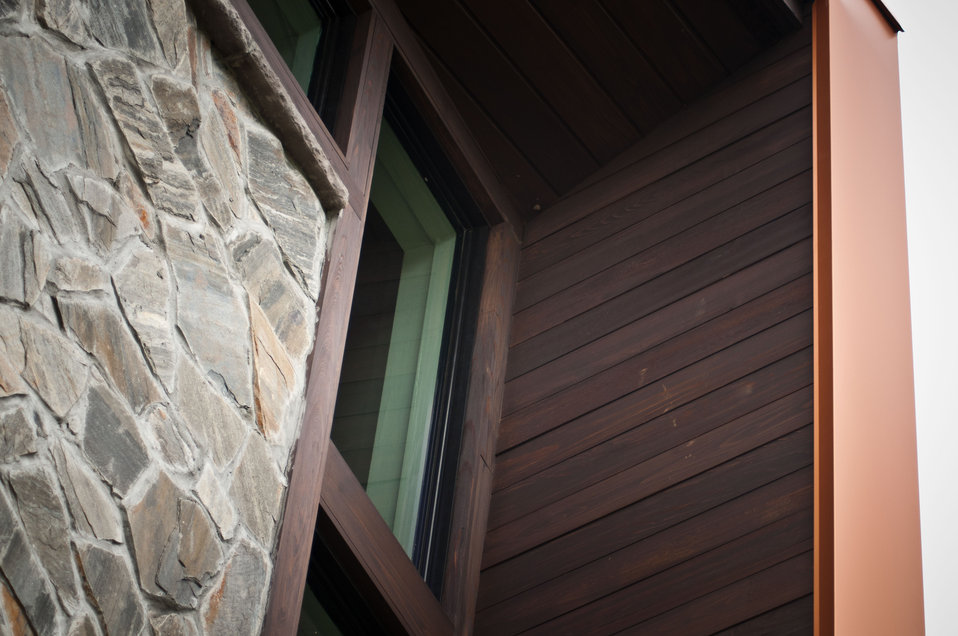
Cooper Vineyards in Louisa, VA, is the first winery on the East Coast and the second in the country to be awarded the fourth and highest, Platinum certification by Leadership in Energy and Environmental Design (LEED).
From a Virginia Wine Board Marketing Office press release, “The process of building a LEED platinum certified building was initially more expensive and arduous than co-owners, Jacque Hogge, MD and Geoffrey Cooper, MD expected, but they were able to get financial assistance from the United States Department of Agriculture. “Know that there are grants available to help with the costs of sustainable building projects,” Hogge advises to other potential green wineries. Cooper Vineyards received 2 of the 3 USDA (U.S. Department of Agriculture Rural Development (RD) Rural Energy Financing program) grants awarded in Virginia in 2010 to help with the expenses of their construction.”
Rural Energy Financing program focuses on loan guarantees, loans and grants to agricultural producers, businesses, cooperatives and rural residents for renewable energy systems and to make energy efficiency improvements.
The tasting room and building collects rainwater from the roof; uses low flow water fixtures to reduce usage by 40%; utilizes structurally insulated panels for the roof and walls; heats and cools the entire building using a geothermal system that includes pipes that are embedded in the parking lot; low-voltage LED lighting with daylight and occupancy sensors provide ample light when it is needed; a solar panel array provides more than 15% of the energy needs for the building, and much of the construction materials are from local and recycled material sources. For more information about USDA please go to www.usda.gov, Rural Development and Rural Energy Financing. LEED was developed by the U.S. Green Building Council (USGBC) is a 501 c3 non-profit organization committed to a prosperous and sustainable future for our nation through cost-efficient and energy-saving green buildings.